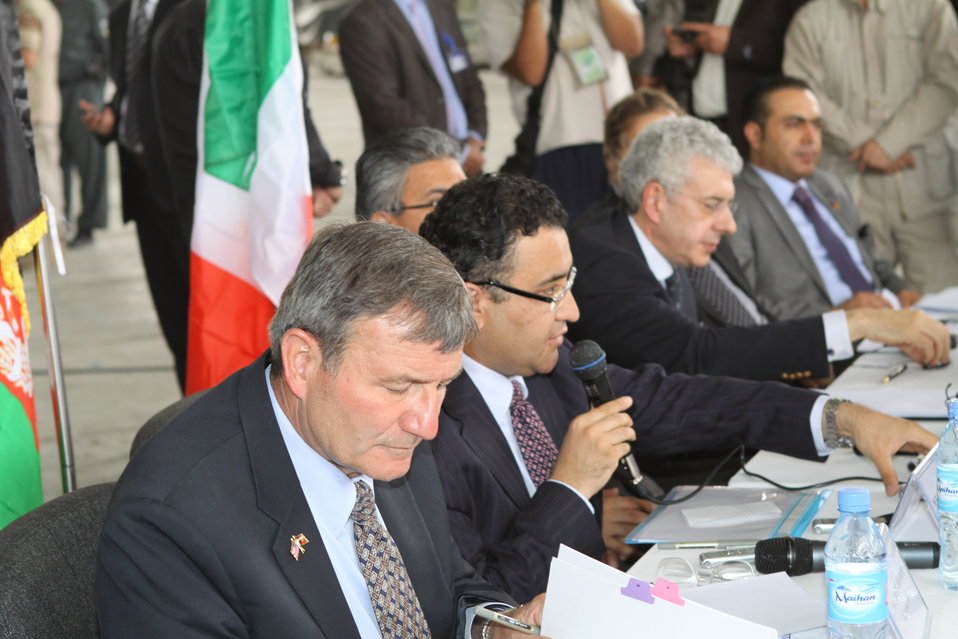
100525 Hirat Marble Conference 358